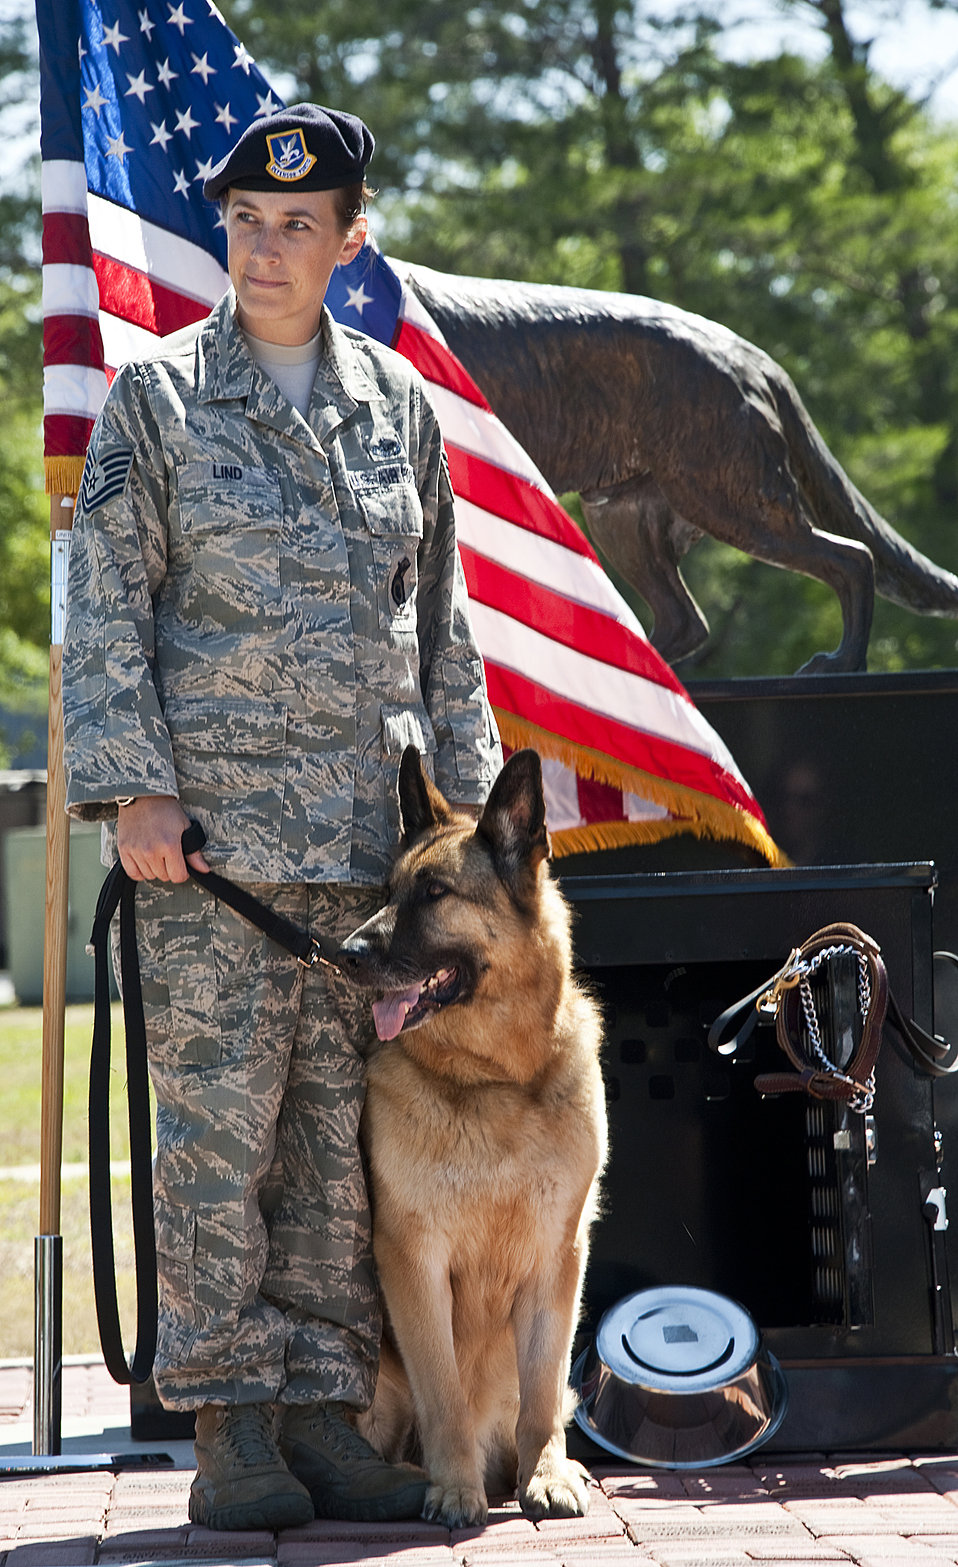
Loyal wingmen

Tech. Sgt. Rebecca Lind stands with Bak, her adopted retired military working dog, during an MWD memorial ceremony May 17, 2011, at the Air Force Armament Museum at Eglin Air Force Base, Fla. Sergeant Lind is assigned to the 1st Special Operations Security Forces Squadron at Hurlburt Field, Fla.